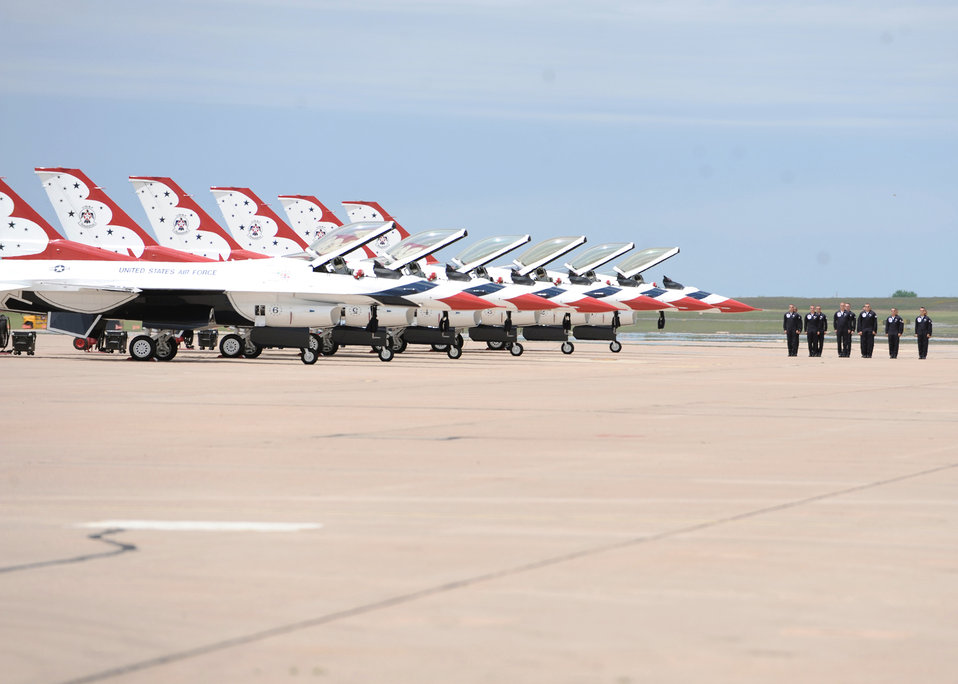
Thunderbirds at Dyess

United States Air Force Thunderbirds approach their perspective Thunderbird aircraft during the Dyess Big Country Air Fest May 1, 2010, at Dyess Air Force Base, Texas.